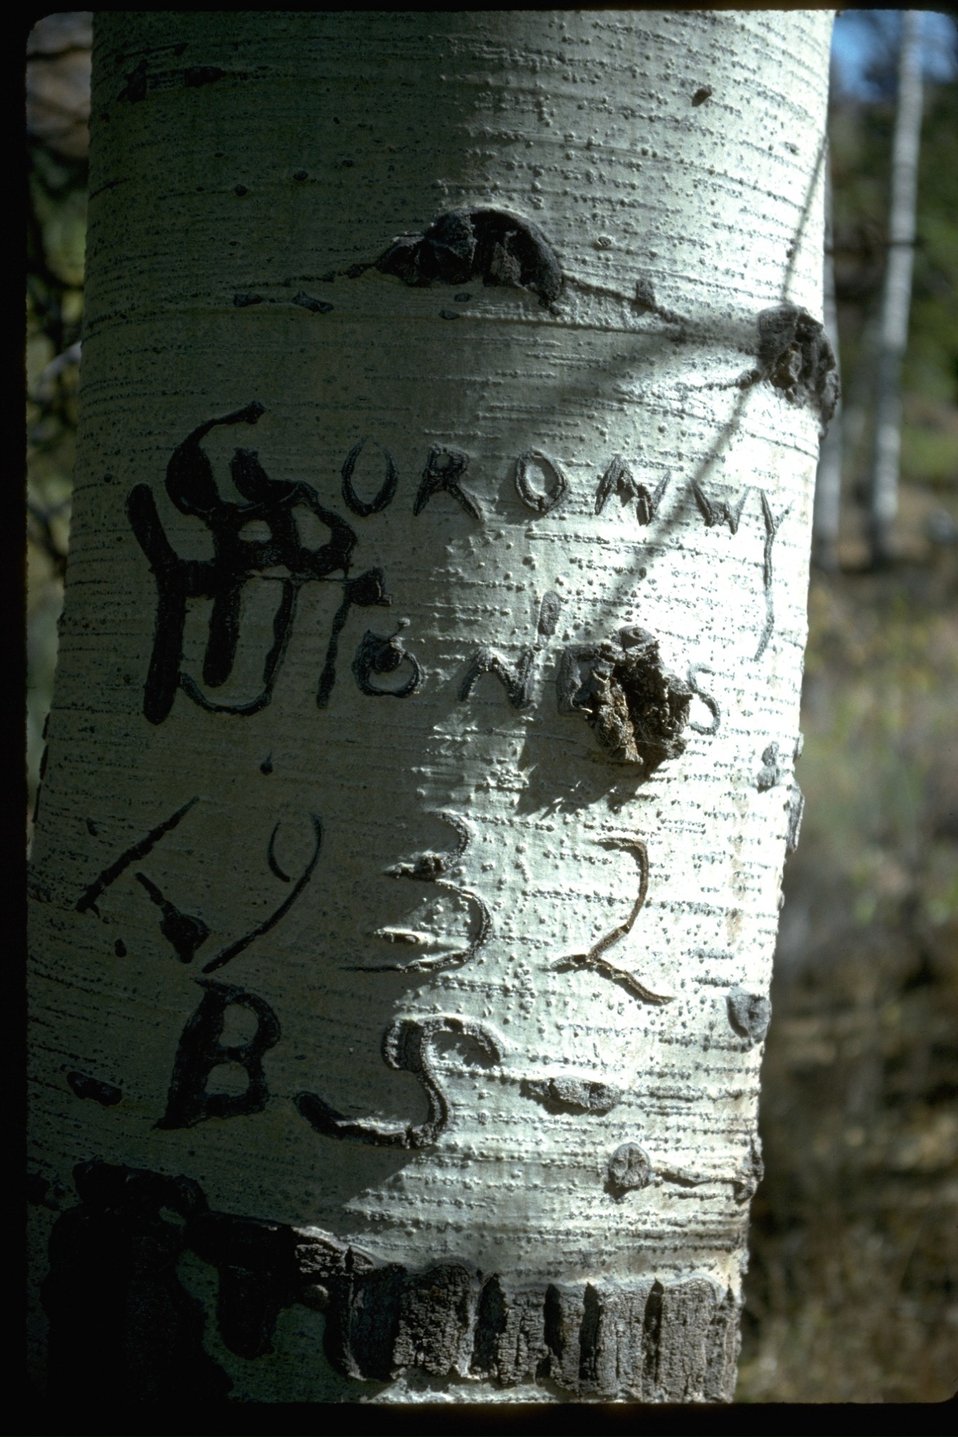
Basque carvings on Aspen tree near Steens Mountain.